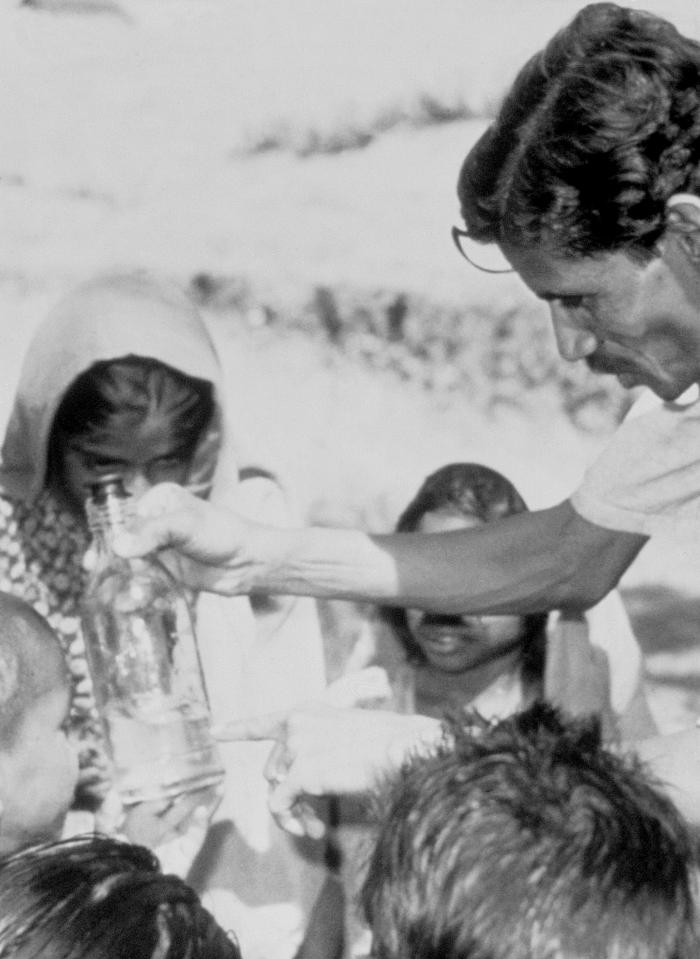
This 1990 photograph depicted a field technician holding an unfiltered bottle of water that had been extracted from a nearby stream. A number of children were observing tiny, free-swimming copepods (water fleas) in the water, which they'd been drinking until educated as to how to filter out these organisms. The importance of the copepod presence lies in the fact that they are carriers of the larval 'Guinea worm' parasite, Dracunculus medinensis, and their ingestion leads to one becoming infected with Guinea worm disease (GWD). Once inside the body, the stomach acid digests the water flea, but not the Guinea worm. These larvae find their way to the small intestine, where they penetrate the wall of the intestine and pass into the body cavity. During the next 10-14 months, the female Guinea worm grows to a full size adult 60-100 centimeters (2-3 feet) long and as wide as a cooked spaghetti noodle, and migrates to the site where she will emerge, usually the lower limbs.